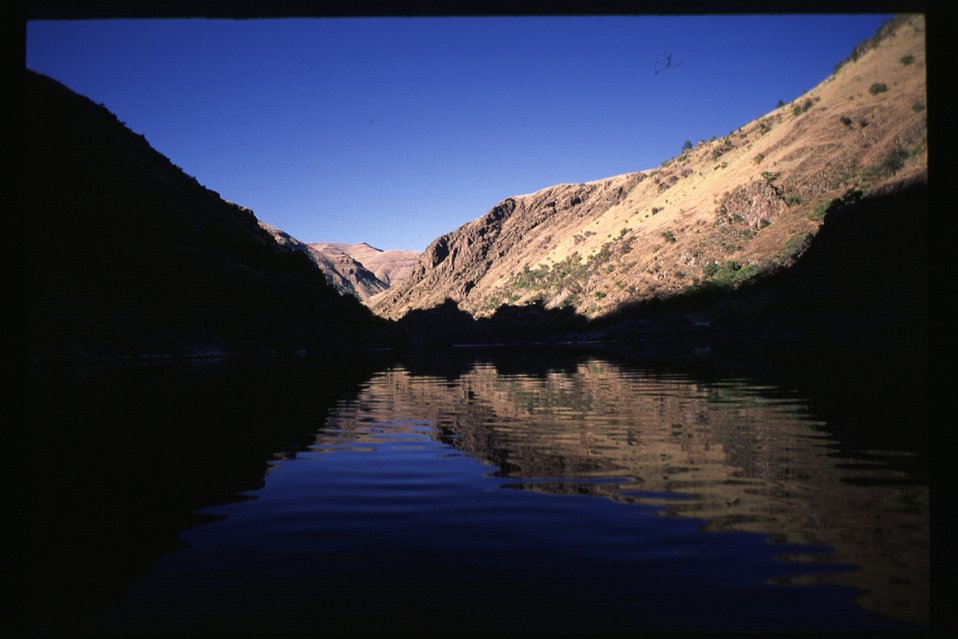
Lower Salmon River Cottonwood Field Office UCSC Upper Columbia Salmon Clearwater District